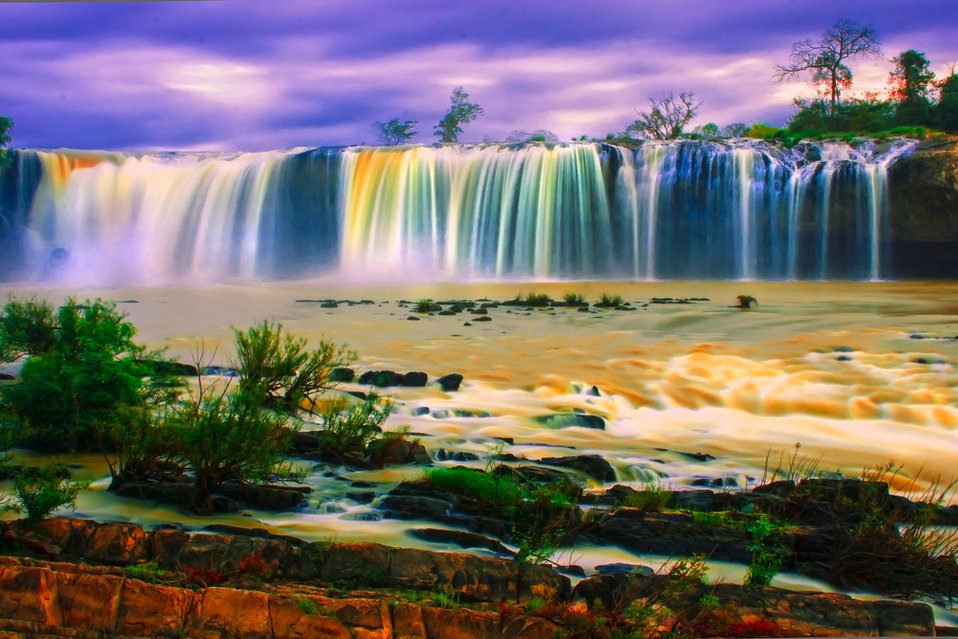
Waterfall #1

Dray nur water fall in the buon me thuot province, vietnam.